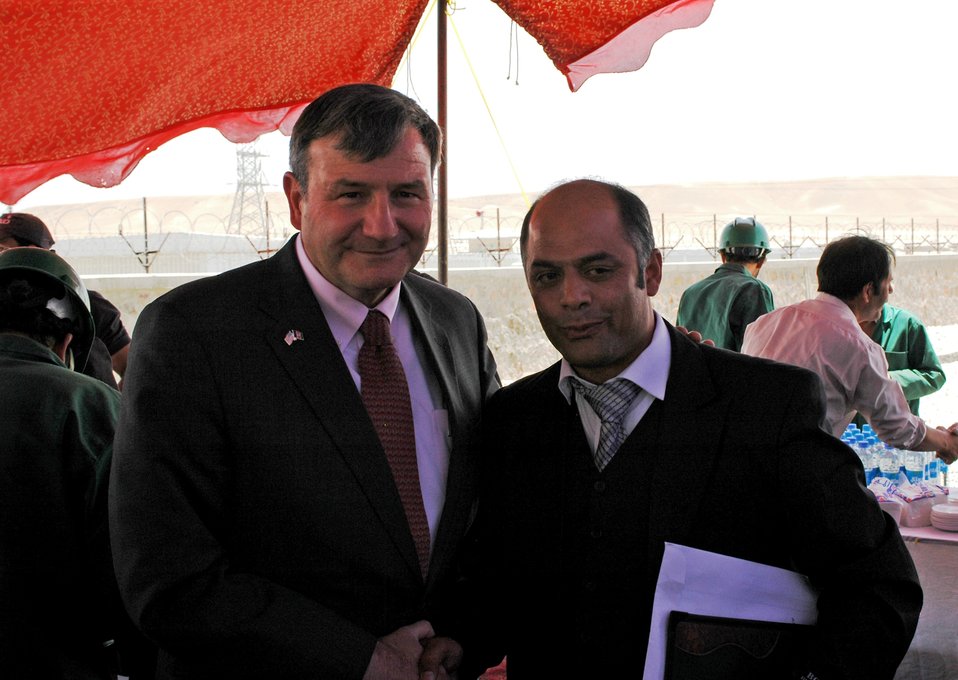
105 MW Tarakhil Power Plant Handover